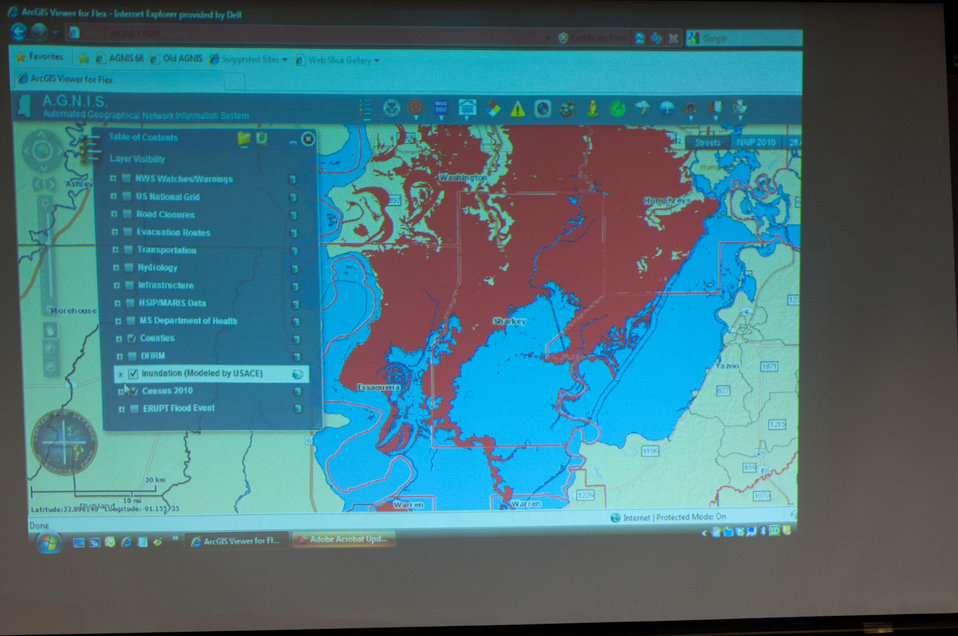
Graphic displays showed current, anticipated and worst case scenarios to the Mississippi emergency housing task force that met in Jackson, MS, on Thursday, May 19, 2011, the list on the left indicates various graphic displays with the responsible organization.